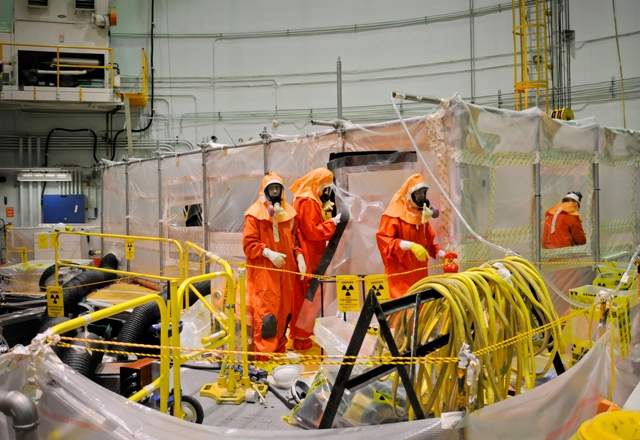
Idaho Site Advances Recovery Act Cleanup after Inventing Effective Treatment

Decontamination and decommissioning workers
enter a tent surrounding the heat exchanger in the Experimental Breeder Reactor-II facility.
***
For the first time in history, workers at the Idaho site
achieved success in the initial cleanup of potentially dangerous sodium in a decommissioned nuclear reactor using an innovative treatment process.

With the help of technology development funds provided by Environmental Management’s Office of Deactivation & Demolition and Facility Engineering, the project developed a citric acid solution that reacts calmly with the sodium, preventing harm to workers. The American
Recovery and Reinvestment Act invested $70 million in the project.